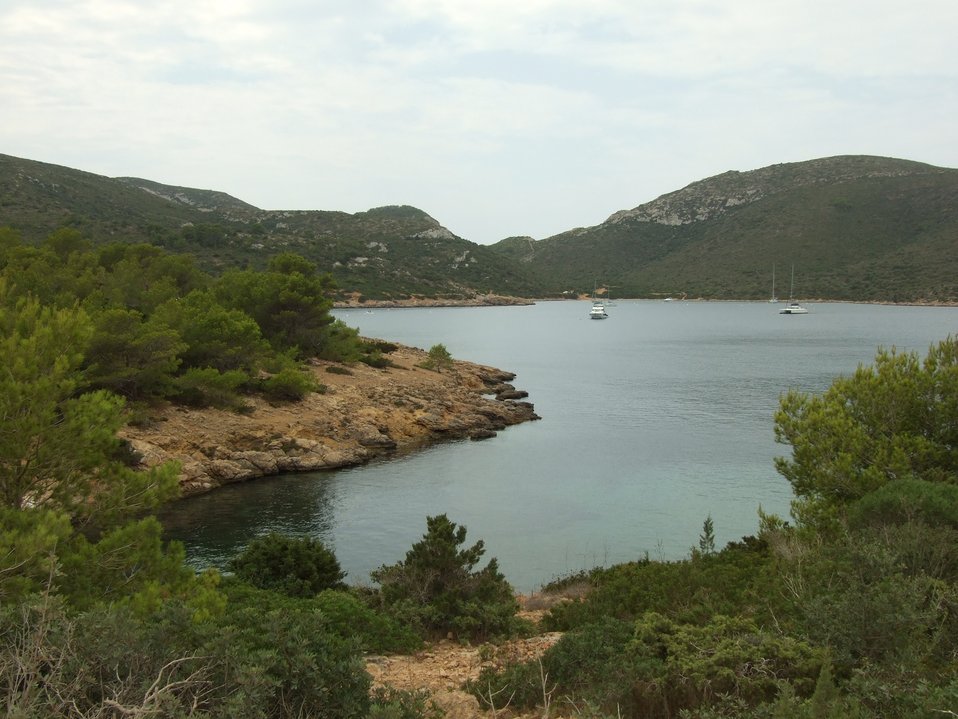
Cabrera